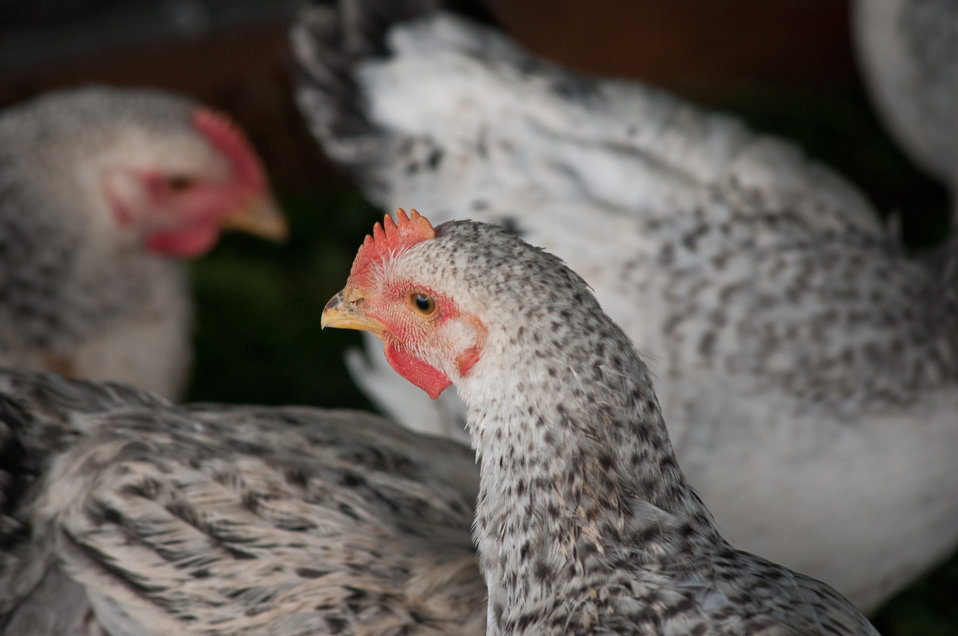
Broiler chickens graze on organic pastures and live in pens that protect them from predators, direct sun light, and wind at Nick’s Organic Farm, owned by Nick Maravell in Adamstown, MD on Friday, July 12, 2013. The enclosures are light enough to be moved by hand, each day, one consecutive section at a time. This allows the pasture to easily recover from the grazing. The farm produces Black Angus beef, chicken, turkey, eggs, hay, soybeans, corn, alfalfa, orchard grass, rye; and other crops. The cattle are100% grass-fed receiving certified organic pasture, certified organic hay (in winter), water and mineral salts mixed with sea kelp. The cattle are not fed hormones, antibiotics or animal products. Poultry feed from grain is ground from organic grain. The poultry also graze on organic pastures. The farm has conducted on-farm research with federal, state and non-profit agencies to refine organic practices. An organization such as the U.S. Department of Agriculture (USDA) Agricultural Research Service (ARS) center in Beltsville has been able to conduct research to improve organic crops and to breed and manage the cattle so that they have.